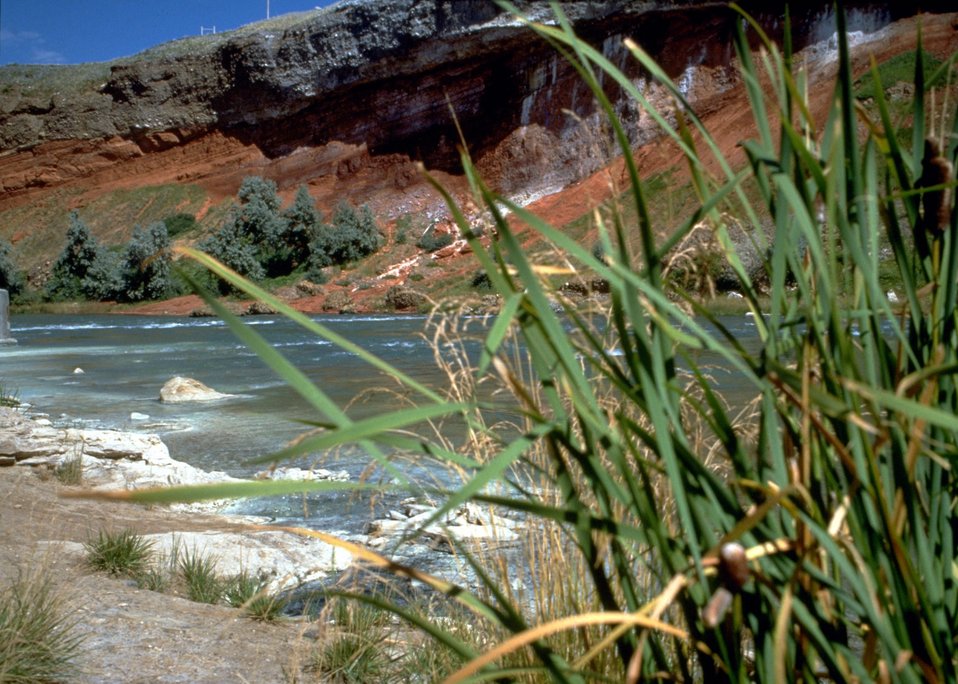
Dead tree limbs along rock area in Wyoming.